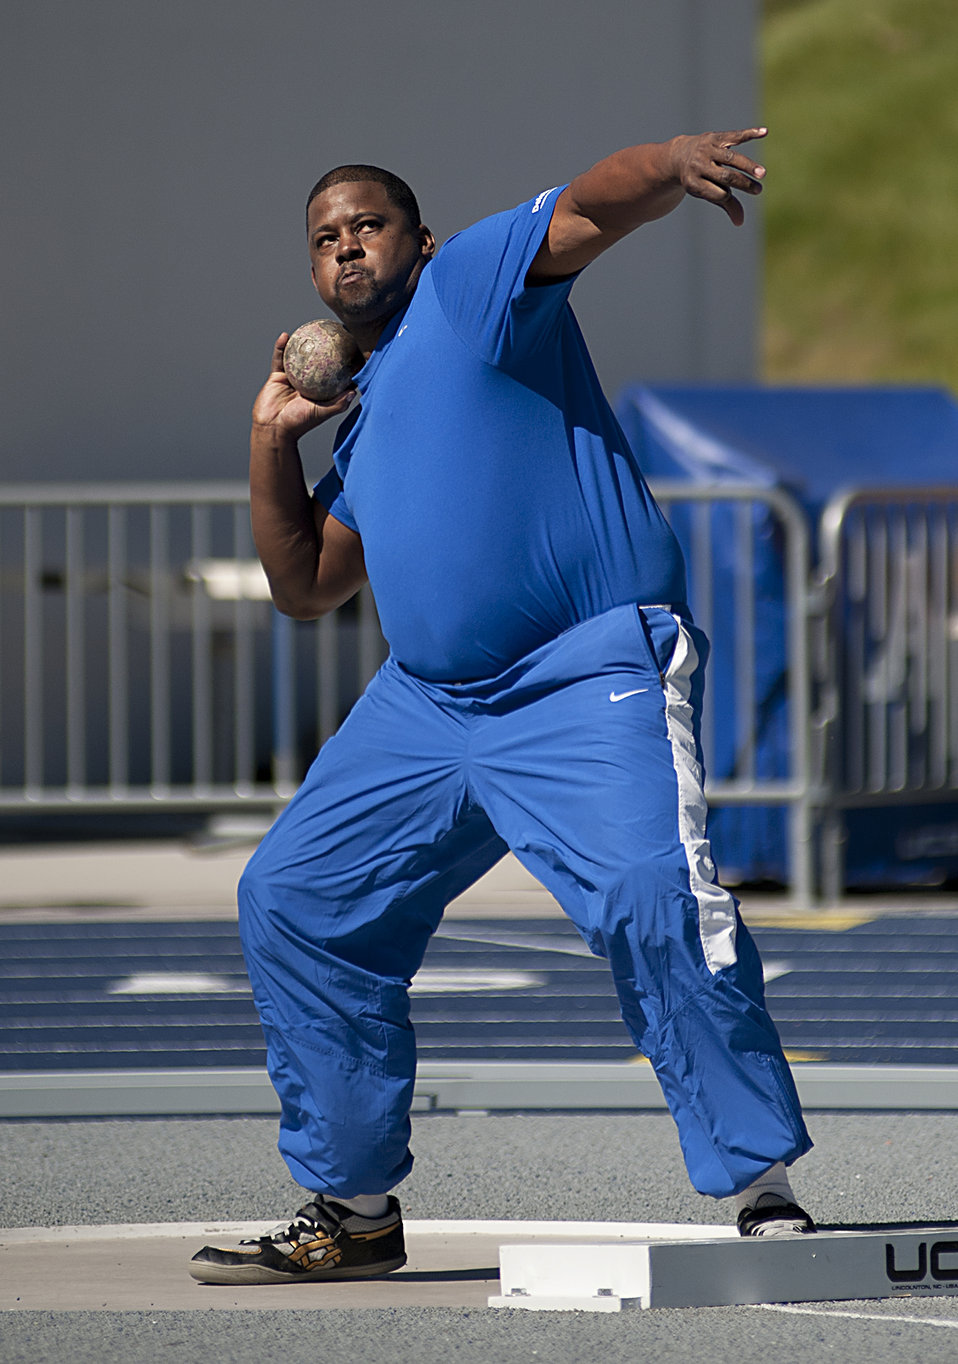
Warrior Games

Kevin Murphy takes part in the shot put competition during Warrior Games 2012 at the U.S. Air Force Academy in Colorado Springs, Colo., May 4, 2012.